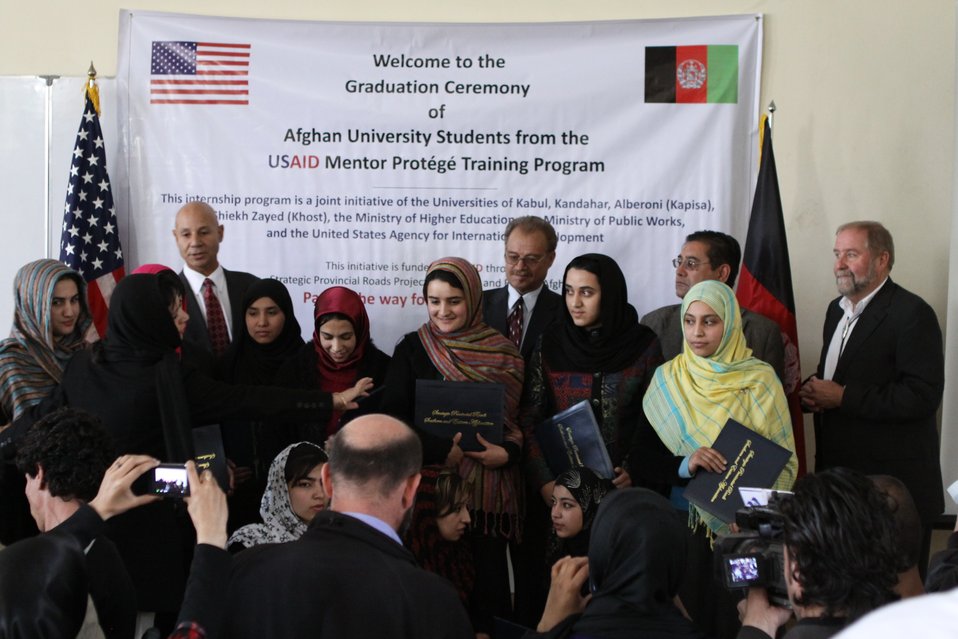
Female University Students Complete Internship

Kabul, Afghanistan | March 16, 2011 – In response to a demand for qualified Afghan engineers, Kabul University celebrated completion of an intensive five-month Mentor Protégé Training Program today by 10 female fourth year university students. The Training Program is a joint effort between the Government of the Islamic Republic of Afghanistan, the U.S. Agency for International Development (USAID), and the Universities of Kabul, Kandahar, Alberoony in Kapisa, Shiekh Zayed in Khost. The graduation ceremony highlighted collaboration with these national institutions in building the technical skills of young Afghans, made possible by USAID.

Four of the interns are engineers, while the remaining six are from the faculties of computer science, economics, and psychology.

Speaking about the event, H.E. Minister of Public Works Abdul Qudus Hamidi said, “The future of Afghanistan lies in developing the skills of our youth, and the engineering skills of these graduates today represent a small but important step forward for the country.”

Keynote speakers at the ceremony included H.E. Deputy Minister of Higher Education Abdul Rahim; USAID Senior Deputy Mission Director Robert Hellyer; and Chancellor of Kabul University Professor Hamidullah Amin. Approximately 150 people, including current and former students attended the graduation.

Launched last year, the Mentor Protégé Training Program has provided qualifying students the opportunity to intern with USAID’s Strategic Provincial Roads-South and East Afghanistan project and gain practical experience in a real work environment. The goal of the program was to offer interns the opportunity to gain hands-on experience to reinforce their formal studies. A total of 30 students from four national universities have benefitted from this program.

“The promotion of women’s rights is integrated into the overall U.S. Government development strategy and can be found in key programs, including education, healthcare, security, rule of law, political participation, agriculture, and economic development,” said Robert Hellyer. “The U.S. Government is committed to the Afghan leadership of programs that directly enhance development, particularly as it relates to women’s issues.”

This event also highlighted the learning achievements of students and emphasized the importance of hands-on internship programs. The curriculum is designed to instill students with the knowledge and confidence to qualify for engineering positions upon completion of their fourth year at their respective universities.